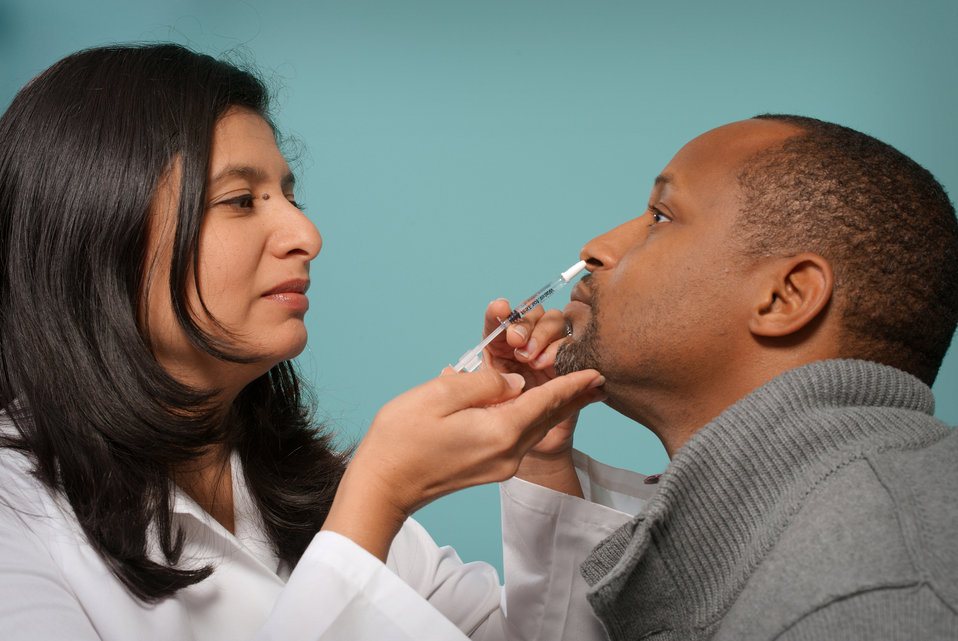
This 2009 image depicts a healthcare practitioner as she was administering the H1N1 live attenuated intranasal vaccine (LAIV) to an African-American man. Using a small syringe, she was delivering the vaccine mist into the man's left nostril.